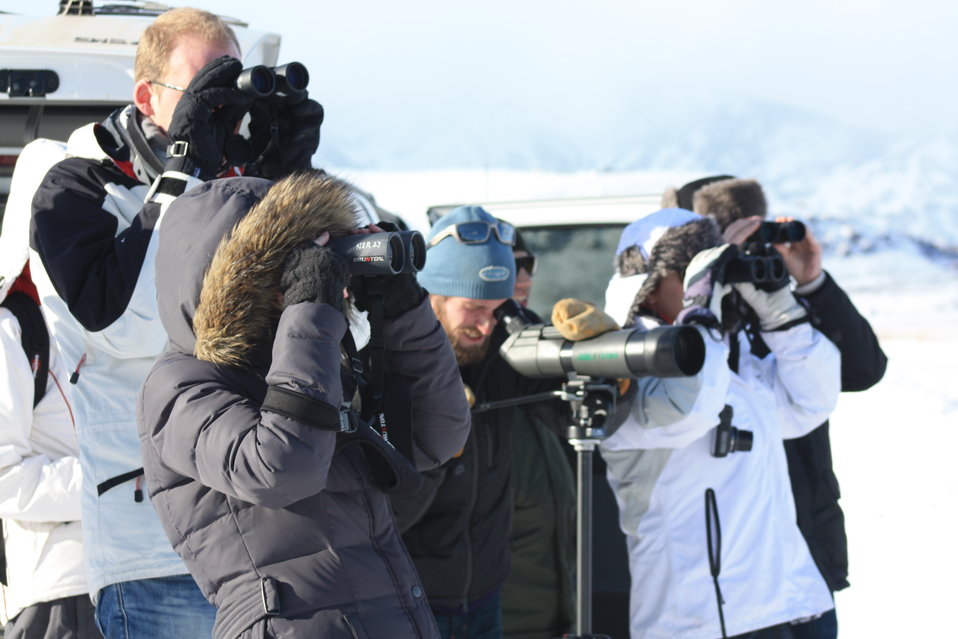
All Eyes on Deck

Naturalist-led wildlife excursions during the winter season have become a very popular program at the National Elk Refuge. Participants routinely see elk, bighorn sheep, and waterfowl, along with occasional wolves, coyotes, and moose.